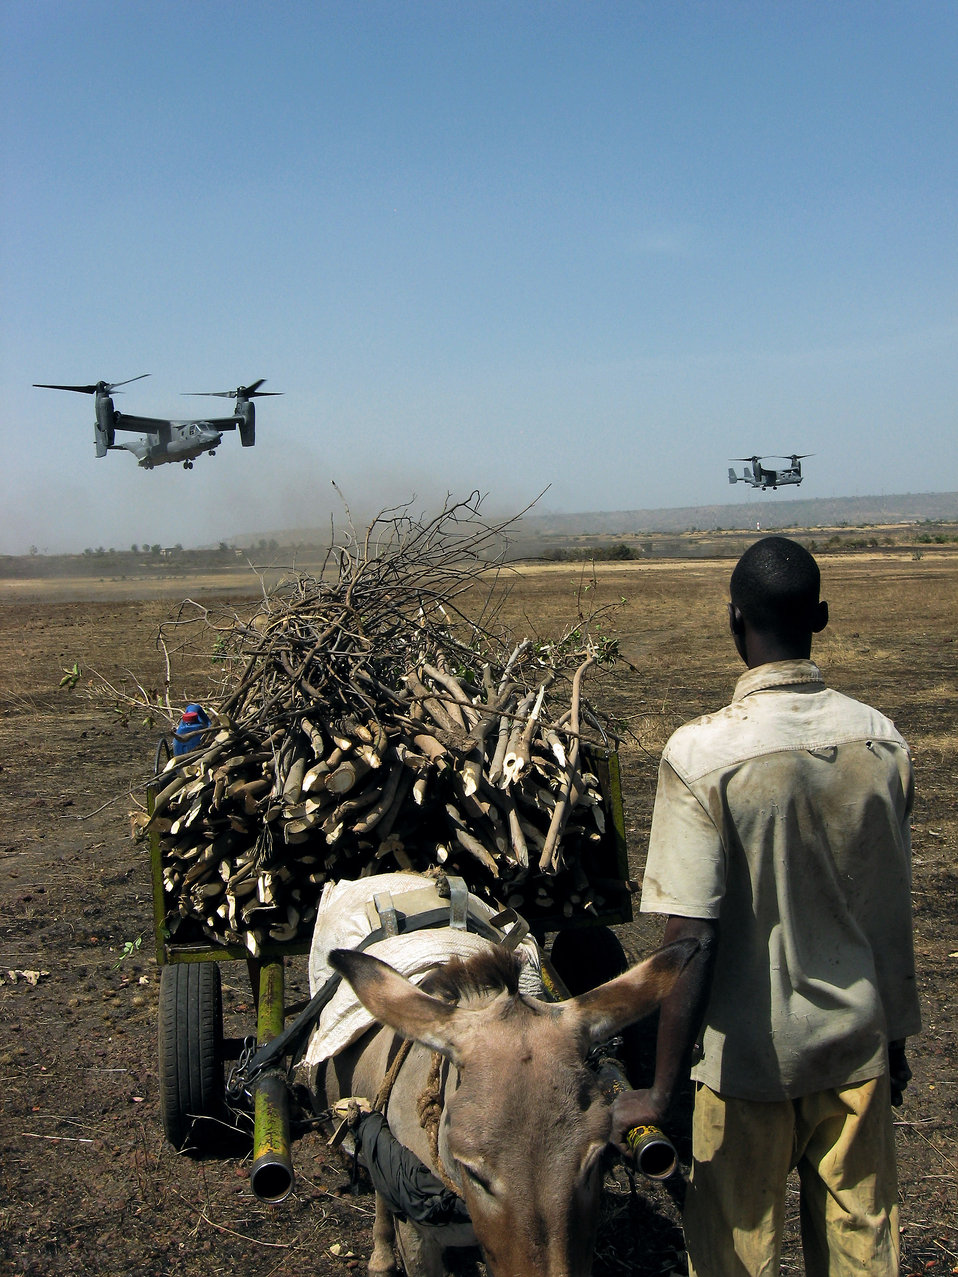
Is that a UFO?

A Malian boy stops to watch incoming U.S. Air Force CV-22 Ospreys carrying Malian and Senegalese troops during an exercise near Bamako, Mali. The exercise provides U.S. Special Operations forces the opportunity to work with African and European partner nations in the effort to build bonds of trust and confidence